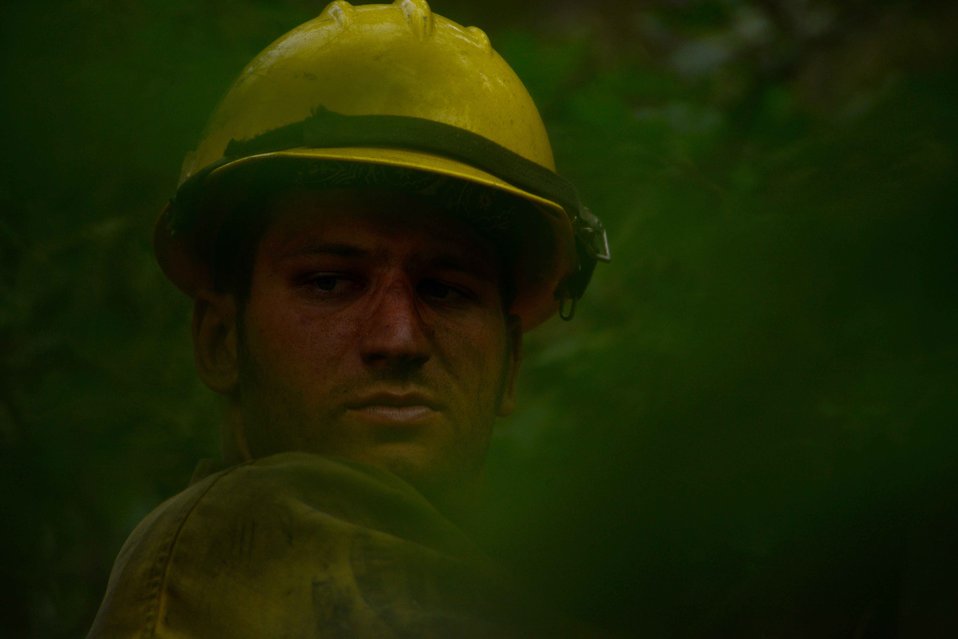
Clear the line

Brad Mabery cuts a tree with his chainsaw while clearing a fire line in the Mount Saint Francois area of Colorado Springs, Colo., on June 28, 2012. Mabery and the rest of the firefighters of the Vandenberg Air Force Base, Calif., Hot Shots are helping to battle several fires in Waldo Canyon.